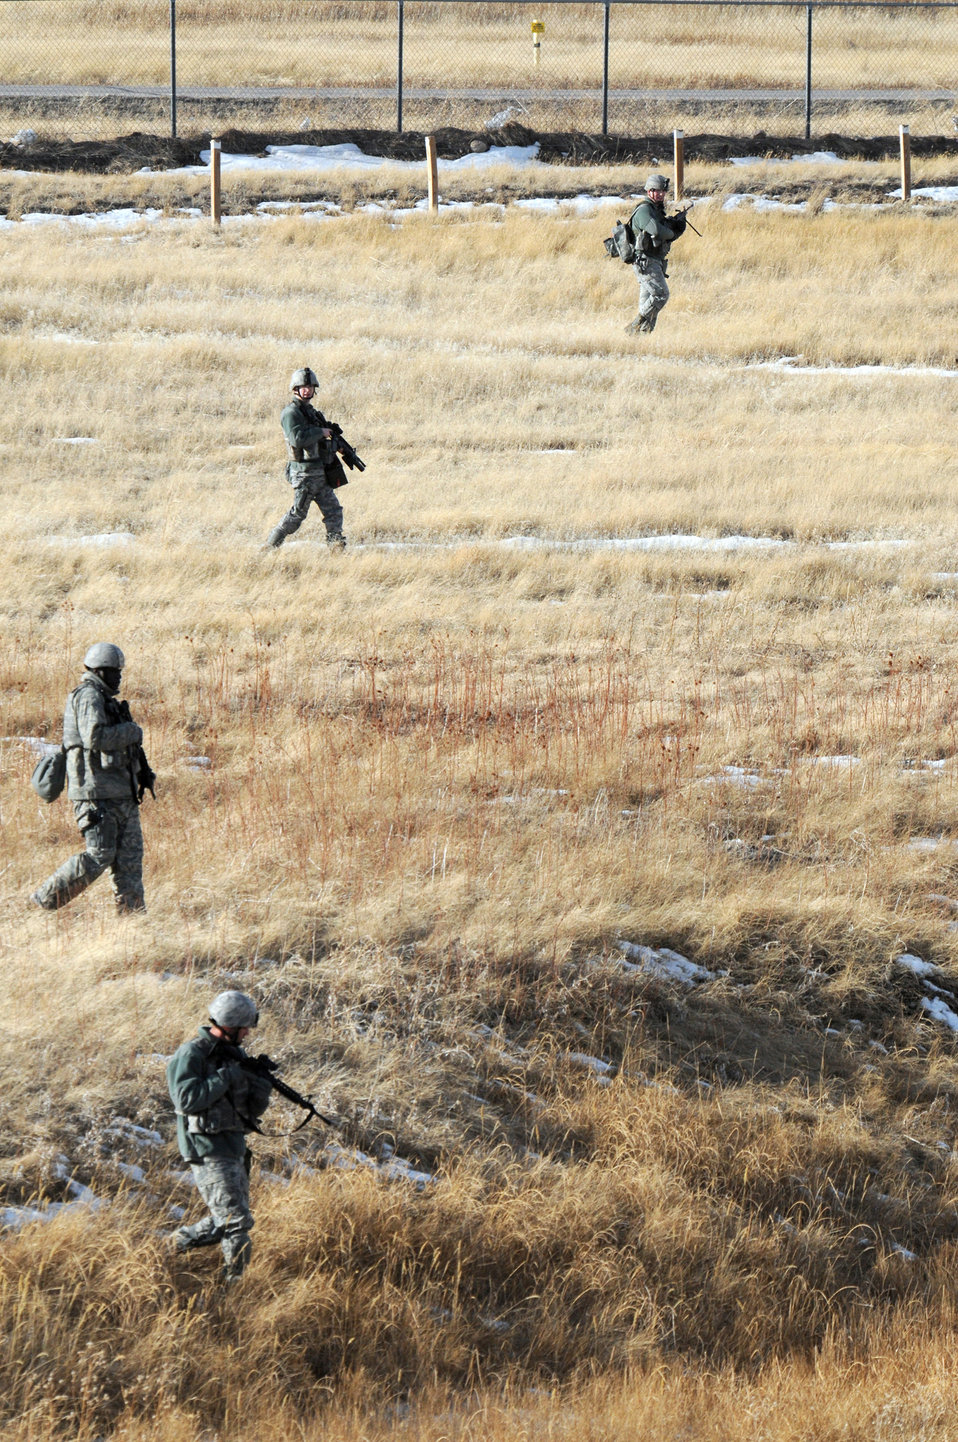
Security forces exercise

Security forces members patrol an open field during an exercise Jan. 13, 2011, at F.E. Warren Air Force Base, Wyo.